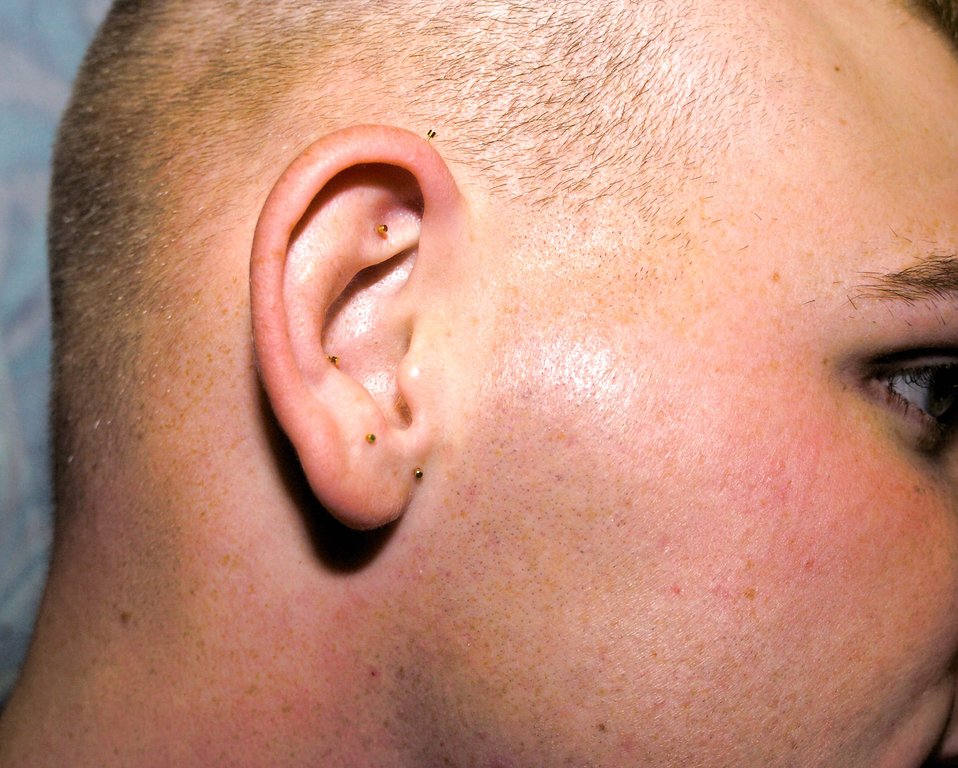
Battlefield acupuncture introduced at Landstuhl

Five golden studs line the ear of Army Spc. Bradley Phillips who was successfully treated with acupuncture at Landstuhl Regional Medical Center in Germany for back pain he encountered while deployed to Iraq.